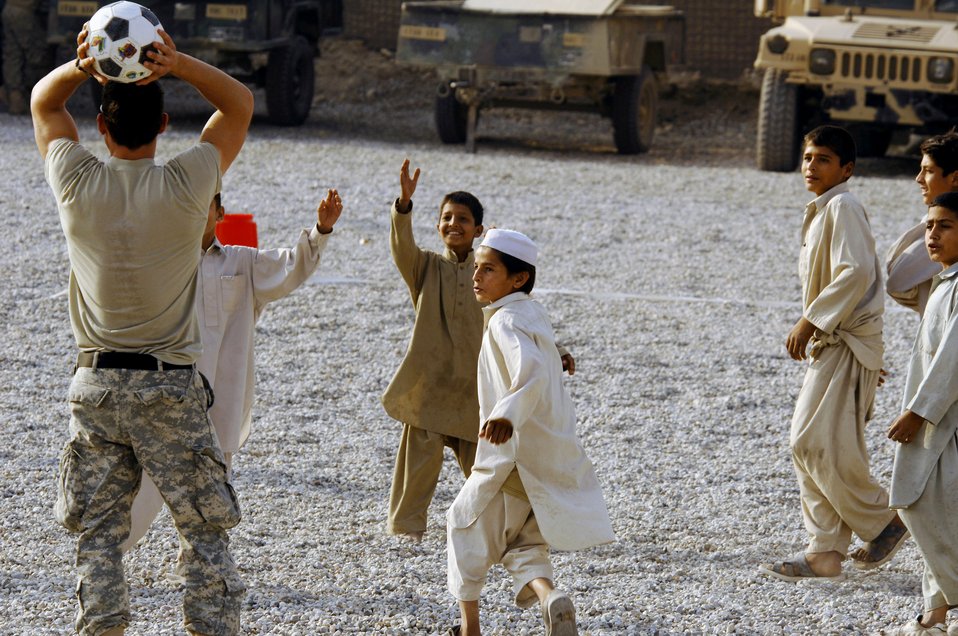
Having a ball

Army and Air Force members from the Nangarhar Provincial Reconstruction Team and Afghan children play soccer together Nov. 9 at the PRT forward operating base in Jalalabad, Afghanistan. The Nangarhar PRT is a joint team of Airmen, Soldiers and representatives from the U.S. Department of State, U.S. Agency for International Development and the U.S. Department of Agriculture. The team is responsible for helping the Islamic Republic of Afghanistan government improve security, governance and promote reconstruction in the Nangarhar Province. PRT members assess community needs and then builds schools, government centers, roads, medical capability and basic infrastructure throughout Nangarhar. Unit members also mentor Afghan government officials and security forces to provide the Afghan people with the state representation and security they need.